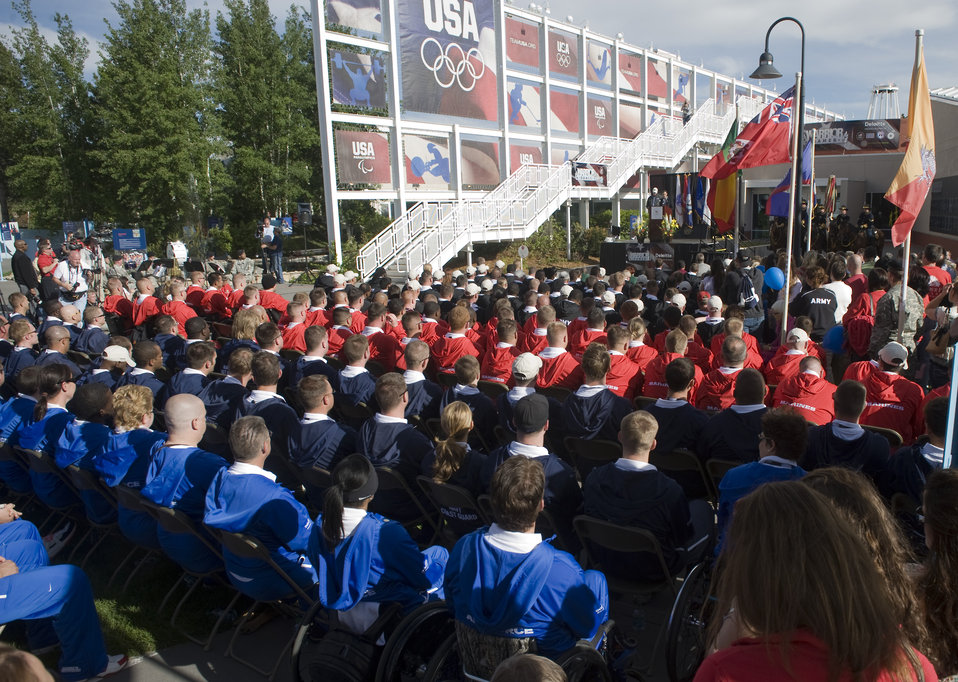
Ceremonies kick off 2011 Warrior Games

Teams representing the Army, Marine Corps, Navy and Coast Guard, Air Force and Special Operations Command sit May 16, 2011, during the 2011 Warrior Games opening ceremony at the Olympic Training Center in Colorado Springs, Colo.